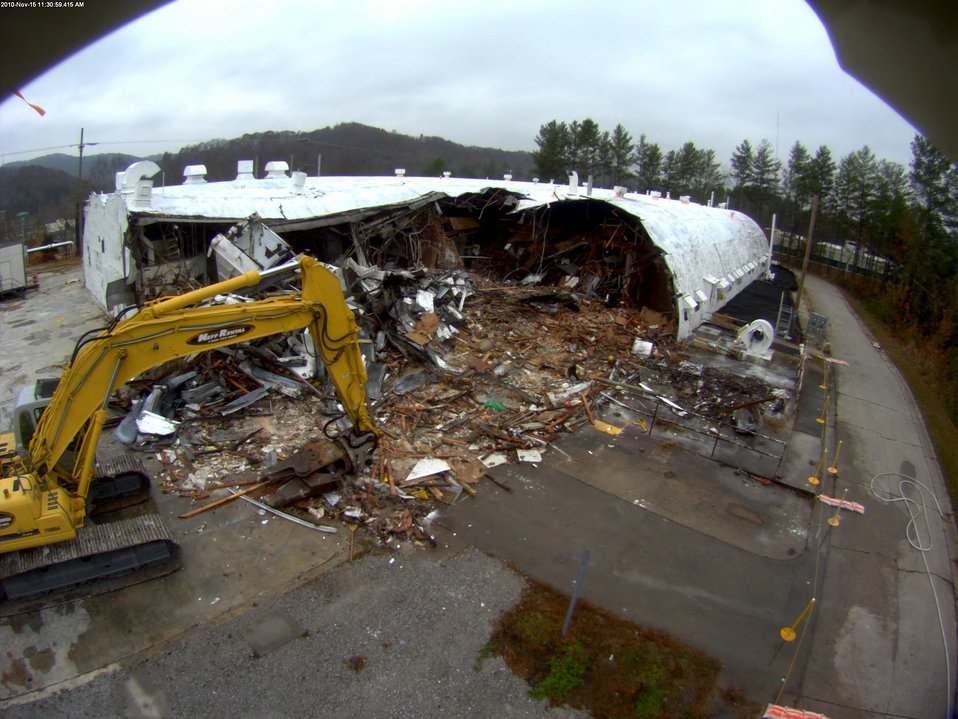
2000 Complex demolition

In November 2010, workers demolished the west portion of the 2000 Complex at the Oak Ridge National Laboratory.